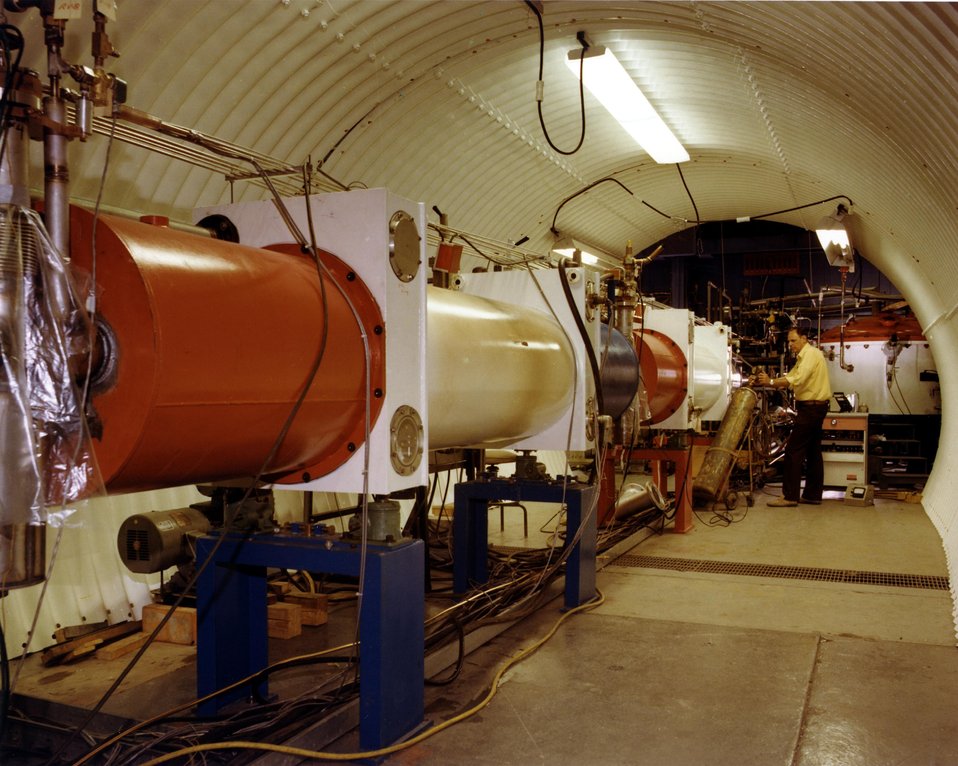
CBA IS A PROTON-PROTON COLLIDING BEAM ACCELERATOR BEING BUILT TO STUDY BASIC STRUCTURE OF ENERGY AND MATTER. THE FACILITY ITSELF IS AN UNDERGROUND CIRCULAR TUNNEL 3.8 KILOMETERS IN CIRCUMFERENCE. TWO RINGS OF SUPERCONDUCTING MAGNETS WILL BE INSIDE THE TUNNEL. PROTON BEAMS WILL BE INJECTED INTO THE TUNNEL AND ACCELERATED TO ENERGIES UP TO 400 GEV. AT SIX PLACES ALONG THE TUNNEL, THE BEAMS WILL COLLIDE. EXPERIMENTAL HALLS, DESIGNATED BY THEIR 'HAND OF CLOCK' POSITION AROUND THE RING, ENCLOSE THESE SIX INTERSECTIONS AND WILL HOUSE EQUIPMENT FOR STUDYING THE RESULTS OF THE COLLISIONS.